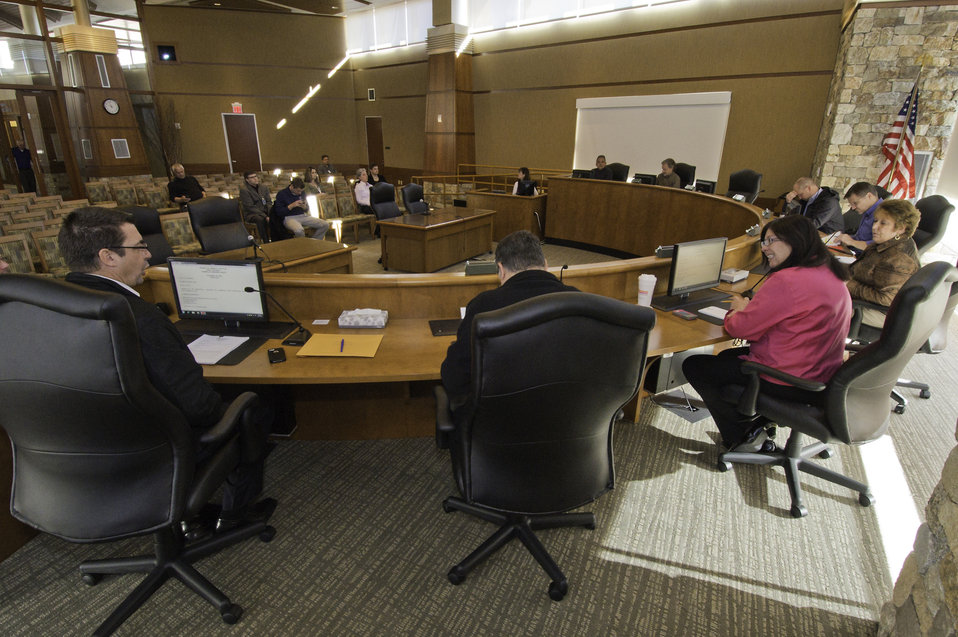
A Mohegan Tribal Council meeting is held at the Mohegan Tribe Community Center and Government Building in Uncasville, CT on Nov. 20, 2013. A U.S. Department of Agriculture (USDA) Rural Development (RD) Community Facility Loan was provided to the Mohegan Tribe for the construction of the Mohegan Tribe Community Center and Government Building in Uncasville, CT. USDA’s RD Community Facilities Programs makes and guarantees loans to develop essential community facilities in rural areas and towns of up to 20,000 in population. Loans and guarantees are available to public entities such as municipalities, counties, parishes, boroughs, and special-purpose districts, as well as to non-profit corporations and tribal governments. The 160,000 square foot building Center hosts an exhibit celebrating federal recognition, history of Mohegan Chiefs, a new Library and Archives space, new Arts and Crafts room, a new gymnasium, and a new community room to enjoy food and family. The Center will continue the Tribe’s plan for growth and meeting the needs of its members.